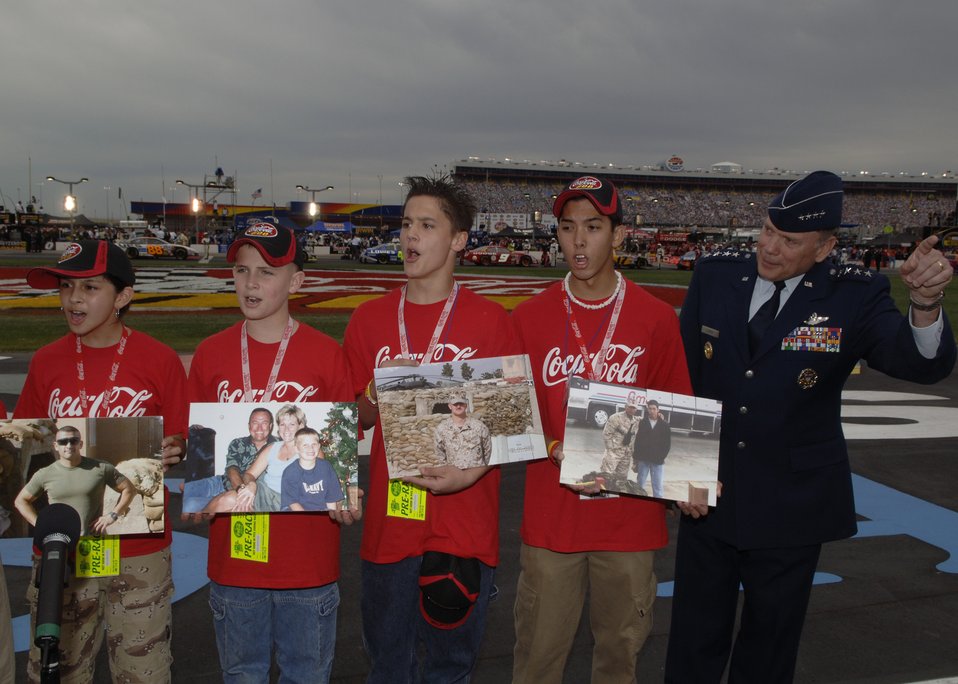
Race into the blue

CONCORD, N.C. -- Air Force Chief of Staff Gen. John P. Jumper helps children of parents serving in Iraq say,